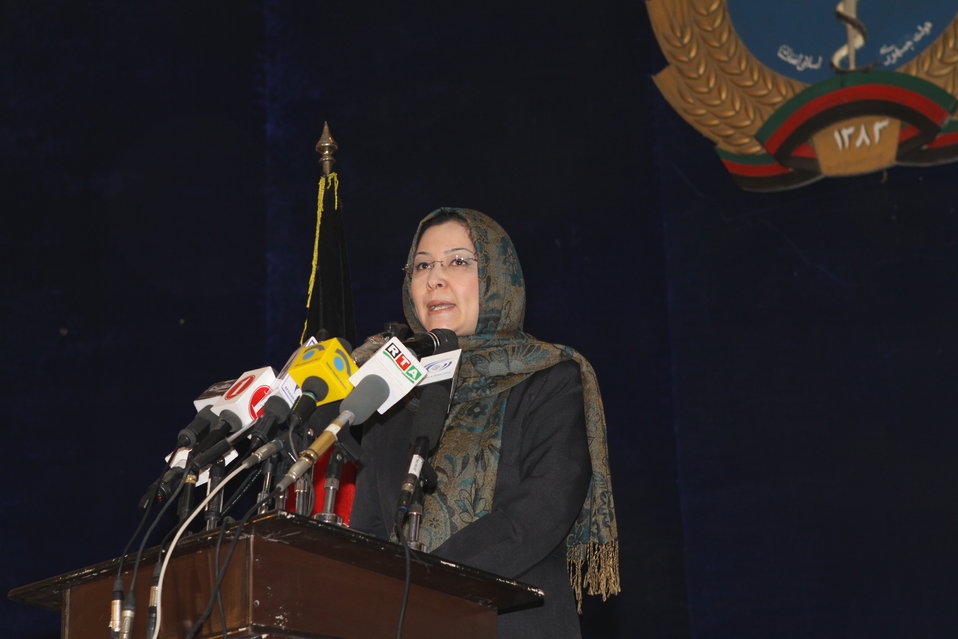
Community Health Workers Celebrated

Kabul, Afghanistan | December 5, 2010 — In support of the United Nations designated International Volunteer Day for Economic and Social Development, Afghanistan’s Ministry of Public Health celebrated its annual Community Health Worker Day today. Acting Minister of Public Health Dr. Suraya Dalil, USAID Senior Deputy Mission Director Robert Hellyer, other government officials, and international donors joined in recognizing the critical contribution of community health workers in Afghanistan and encouraging them to continue their voluntary support to their communities.
The event praised the contributions of the more than 22,000 volunteers throughout the country who deliver community level health-education, counseling, and services out of village health posts located in private homes. The Ministry of Public Health envisioned that community-based healthcare programs will actively encourage communities and families to adopt healthy lifestyles and behaviors, and provide families access to high quality and socially acceptable preventative medicine and life-saving services.
“We have 22,000 community health workers in Afghanistan that are able to implement the basic and standard medicines. They all have been trained through a job description,” said Minister Dalil. Addressing the health workers, she added, “I am proud and feel powerful that I have people like you.”
USAID-funded health projects collaborate closely with the Ministry of Public Health to improve the health and nutritional status of Afghans, provide quality primary healthcare, and promote healthy behaviors at the community and household-levels. USAID supported the training of more than 9,000 of the volunteer community health workers currently working in Afghanistan.
“On behalf of the American people, I congratulate the Community Health Workers for their diligence to gain the skills and knowledge necessary to serve their communities in this important role,” said USAID Senior Deputy Mission Director Hellyer. “USAID strongly supports community based health care and believes that quality community-based health services are essential to reaching Afghanistan’s Millennium Development Goals.”
To support the Basic Package of Health Services, USAID assisted in developing the community health worker training manual, helped train community health worker supervisors and master-trainers, facilitated in-service training, and produced and developed reporting tools, job aids, and education materials.